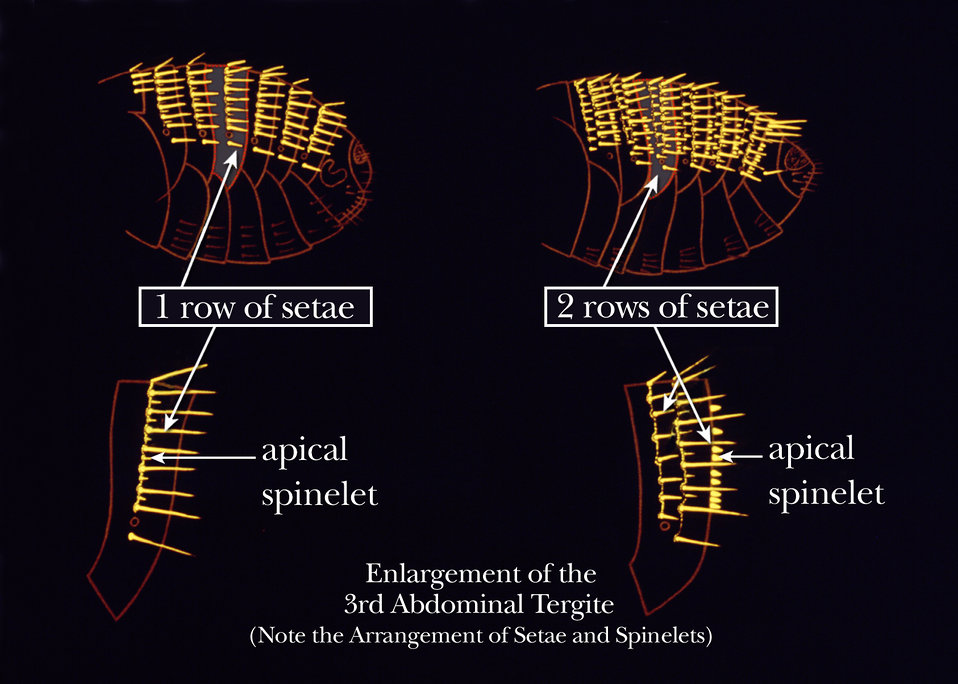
This illustration shows two of the identifying bristle characteristics on the abdominal tergites of the flea's exoskeleton.